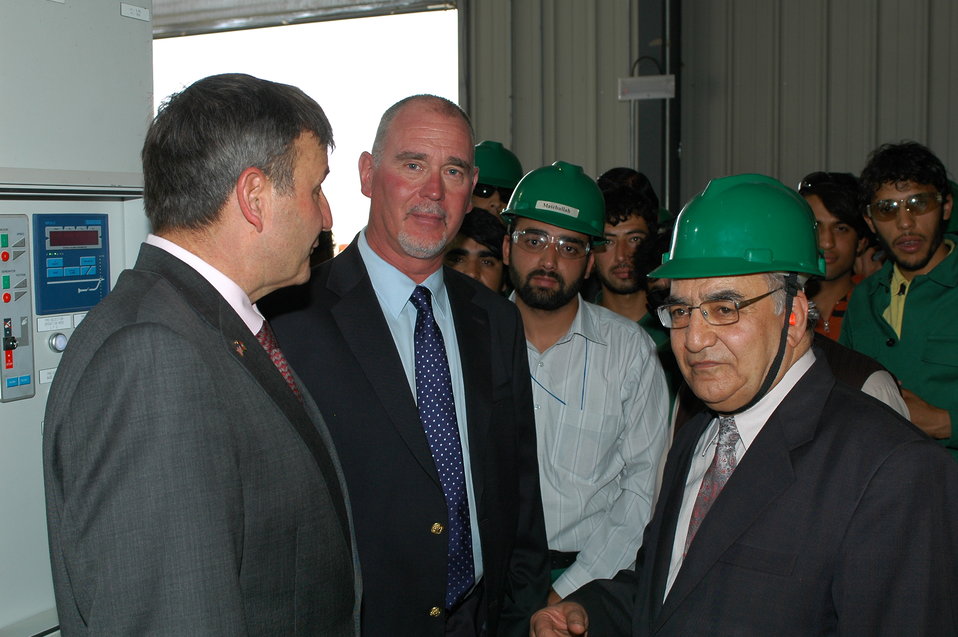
105 MW Tarakhil Power Plant Handover